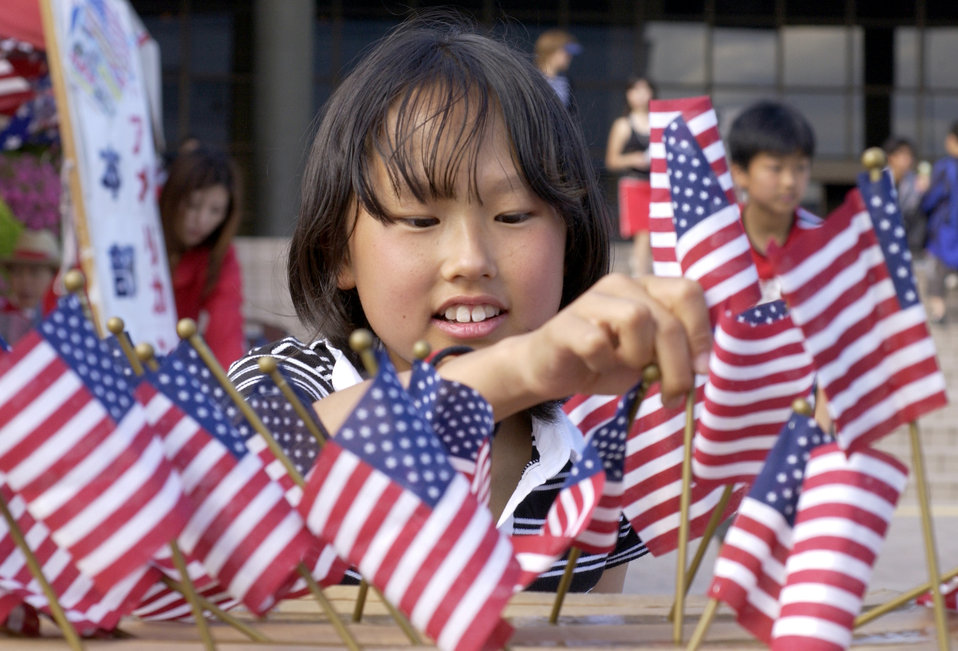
Learning about America

MISAWA CITY, Japan -- A Japanese girl picks up an American flag during the 16th annual American Day celebration June 13 outside nearby Misawa Air Base. The event brings visitors who are interested in learning about American culture from all over northern Japan. More than 70,000 people attended this year's event.